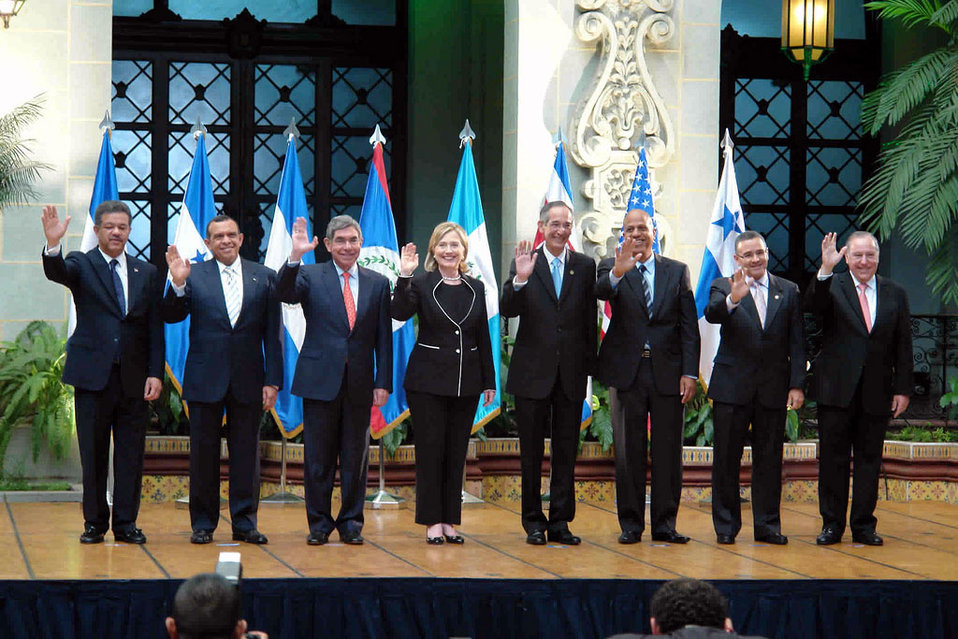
Secretary Clinton With Central American and Dominican Republic Leaders

U.S. Secretary of State Hillary Rodham Clinton pictured with leaders of Central America and the Dominican Republic at the National Palace of Culture, Guatemala City, Guatemala March 5, 2010.